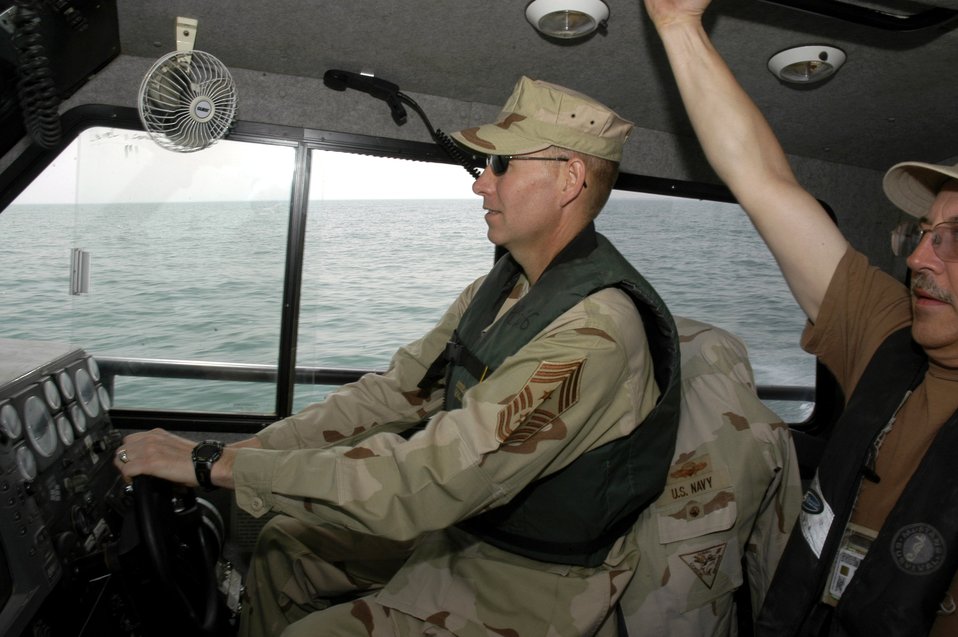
CENTAF leaders visit Airmen at nontraditional places

Chief Master Sgt. Richard Small gets an oportunity to pilot a Navy boat during a tour of Camp Patriot April 21 in Southwest Asia. Camp Patriot is an Air Force run camp situated on a Naval base in the area of responsibility. Camp Bucca is one of the many places in the U.S. Central Command Air Forces AOR where Airmen are doing nontraditional jobs supporting the war on terrorism. Chief Small is the CENTAF command chief.